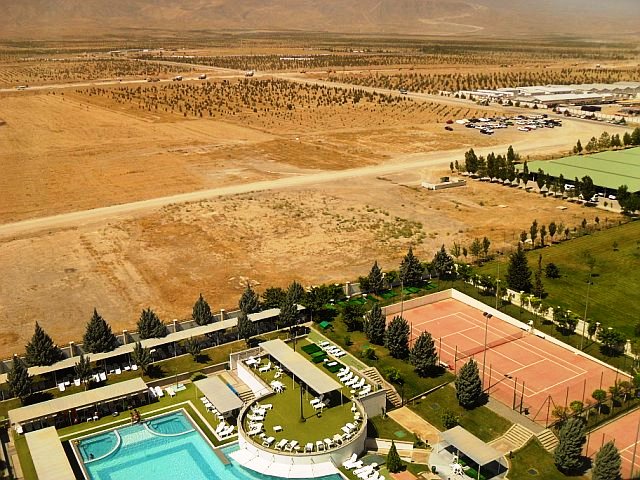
SCA Special Assistant Morgan Takes a Photo of Ashgabat, Turkmenistan

Rebecca S. Morgan, Special Assistant for the Bureau of South and Central Asian Affairs, takes a photo of Ashgabat, Turkmenistan, on June 14-16, 2010